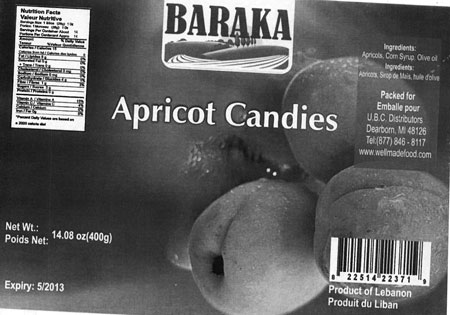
RECALLED - Apricot Candies

December 29, 2011 - Product Recall - Undeclared Sulfites in Baraka Apricot Candies, from Lebanon.